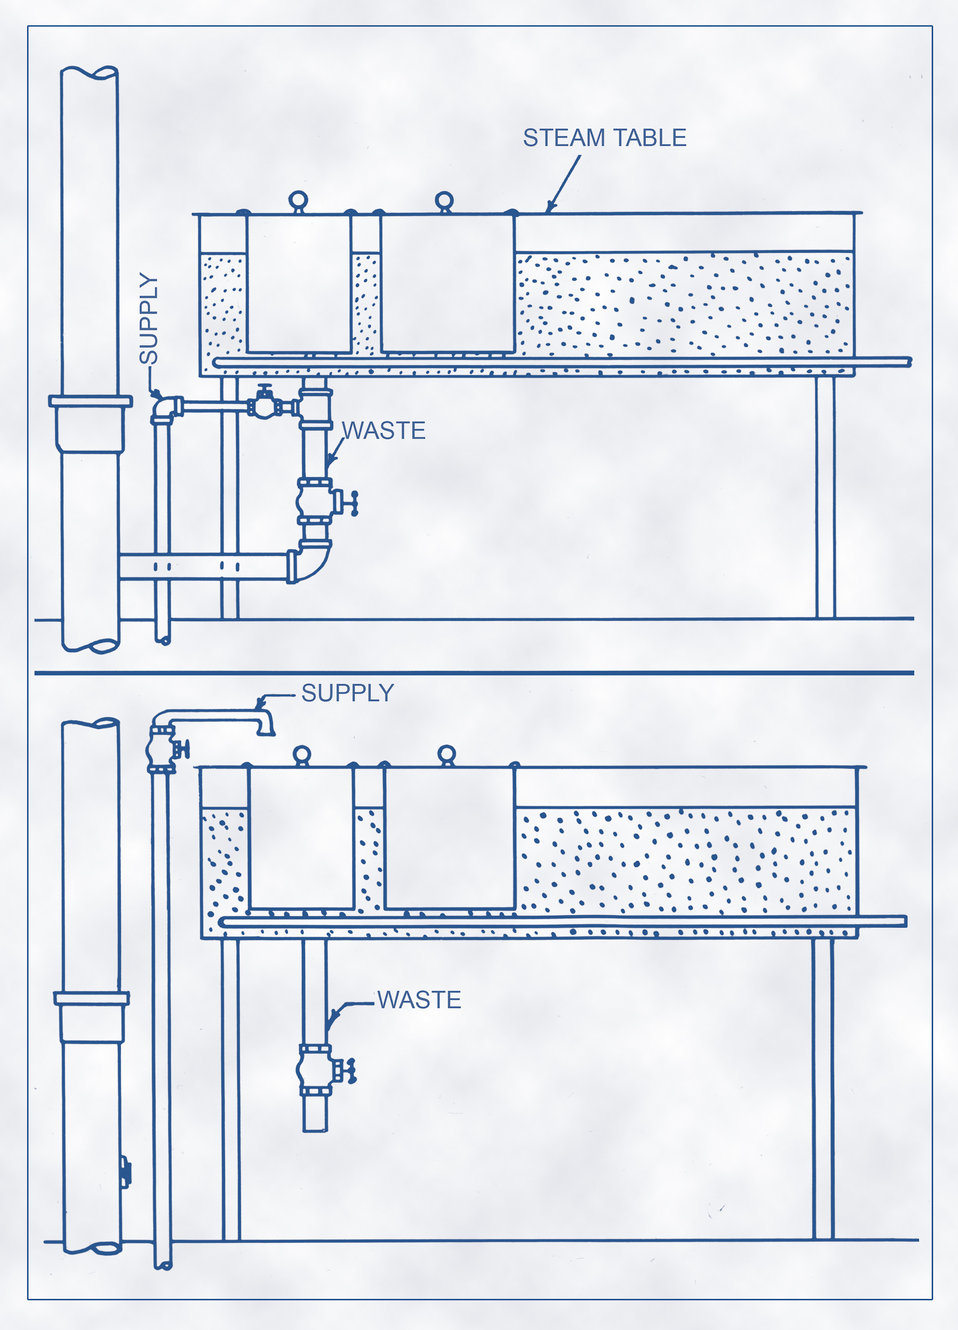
This historic 1936 diagram, which had been digitally enhanced and colorized, illustrated two possible plumbing configurations of a steam table depicting both a sanitary (lower diagram), and unsanitary (upper diagram) method of plumbing interconnectivity.